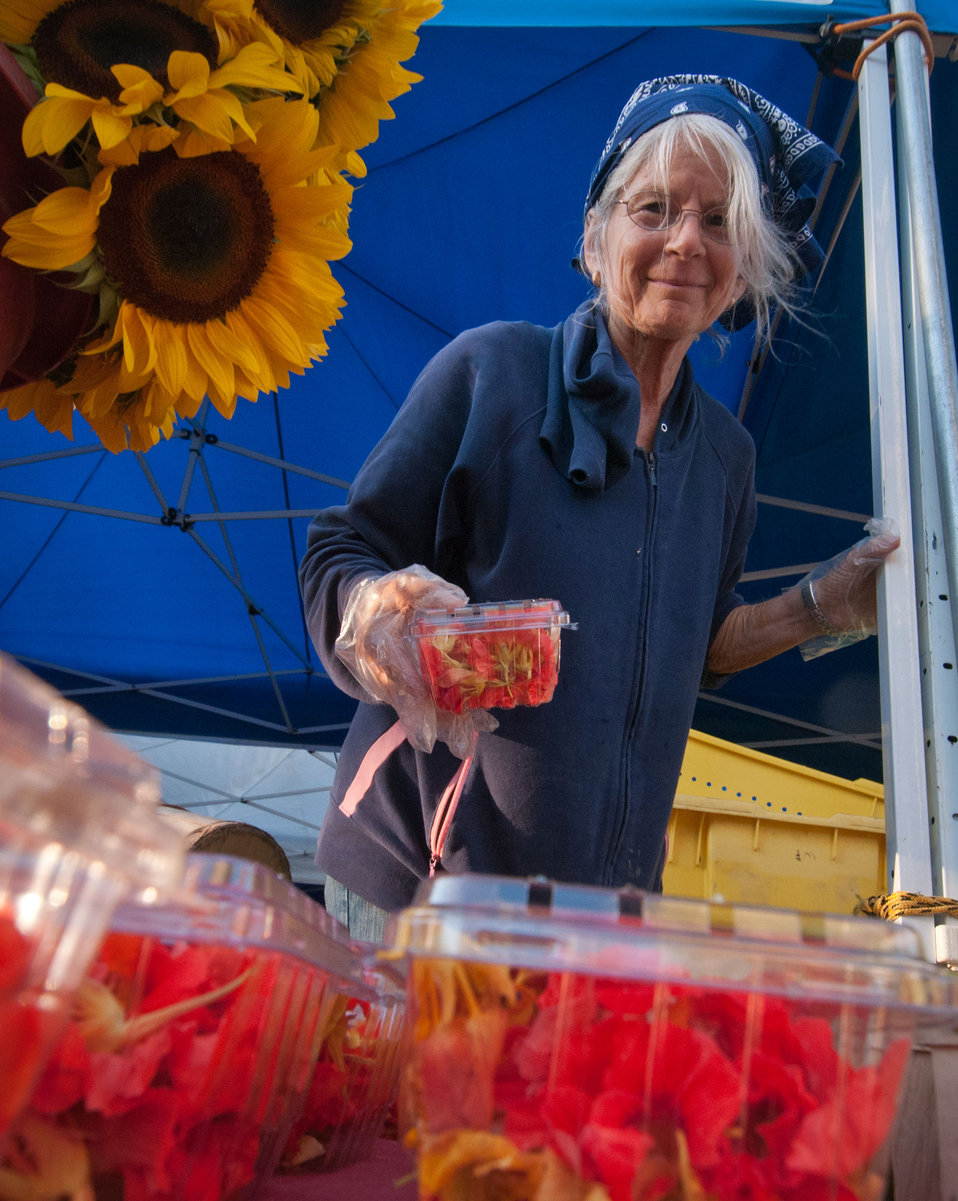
Worden Farm's (www.wordenfarm.com) Anne Hall sets out fresh picked organic sunflowers, nasturtium flowers (pepper flavor) and squash flowers (all decorative and edible) at the Saturday Morning Market, in St. Petersburg, FL on April 14, 2012. Worden Farm is a family farm that provides certified organic produce to Southwest Florida through community supported agriculture (CSA) membership programs and retail sale at several farmer’s (community) markets. Chris Worden, Ph.D. and Eva Worden, Ph.D. founded and operates the farm that employs more than 20 people. Growing certified organic crops in the coastal sandy soil has required them to develop innovative farming techniques. These techniques help the farm as well as help the studies of universities and farm industry. There are several Worden Farm apprenticeships that provide hands-on training in all aspects of the farm, to include direct marketing at the Saturday Morning Market, or other market sites. The farm also holds culinary and gardening workshops, and other interactive educational events. One of their organic certifications is from the U.S. Department of Agriculture (USDA) and they have partnered with the USDA Natural Resources Conservation Service (NRCS) for soil conserving windbreaks and long tunnel structures to nurture seedlings and extend the growing season.